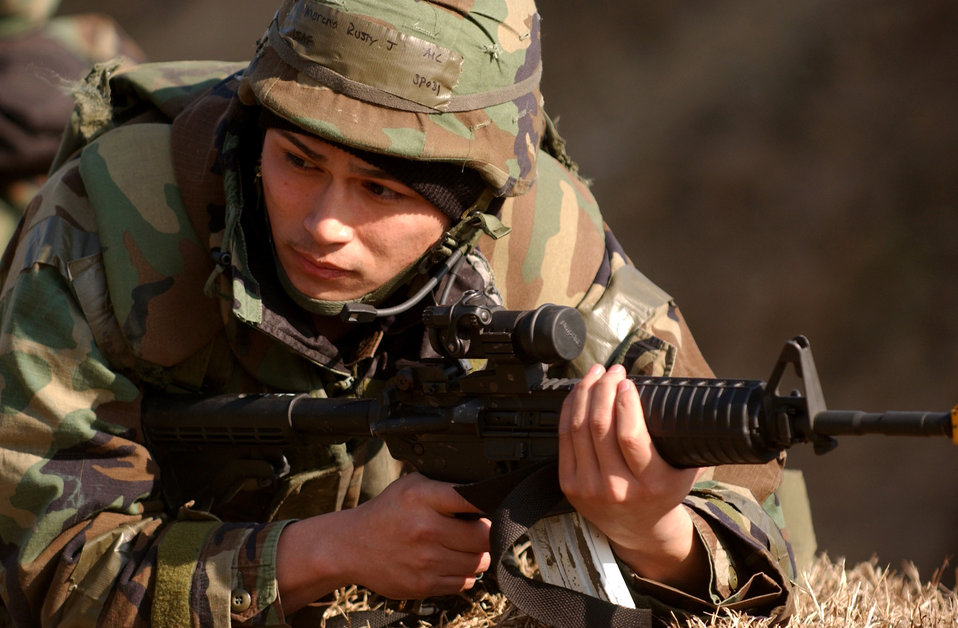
PENCERE ready

OSAN AIR BASE, South Korea (AFPN) -- Airman 1st Class Rusty Moreno provides cover during a simulated attack here Jan. 23. The Peninsula Combat Employment Readiness Exercise, or PENCERE, scenarios tested Osan's ability to protect its operations from missile attacks, and the insertion of thousands of enemy special operations forces looking to disrupt operations. Airman Moreno is with the 51st Security Forces Squadron.